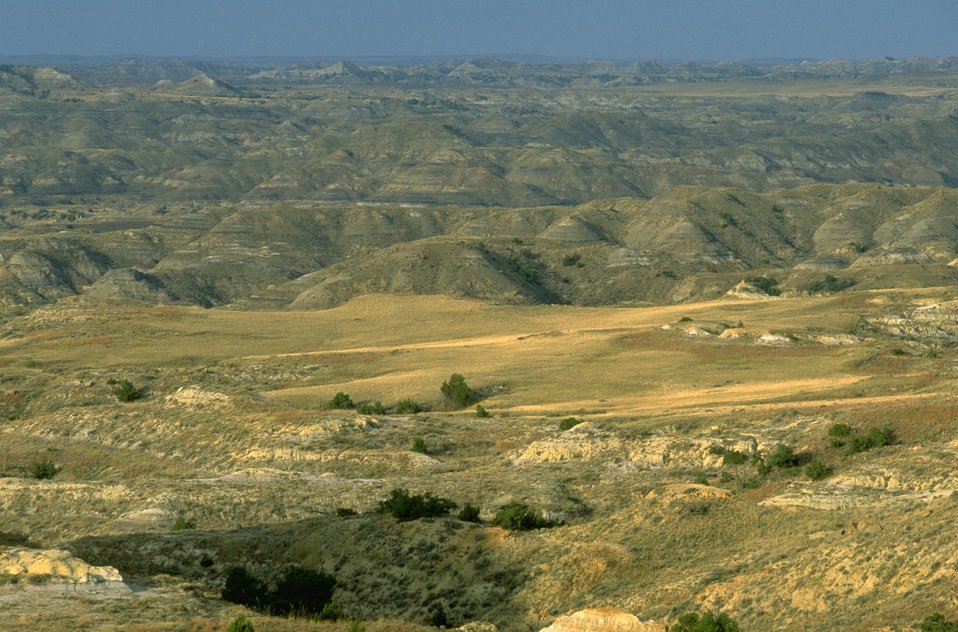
Grassy area in the Terry Badlands